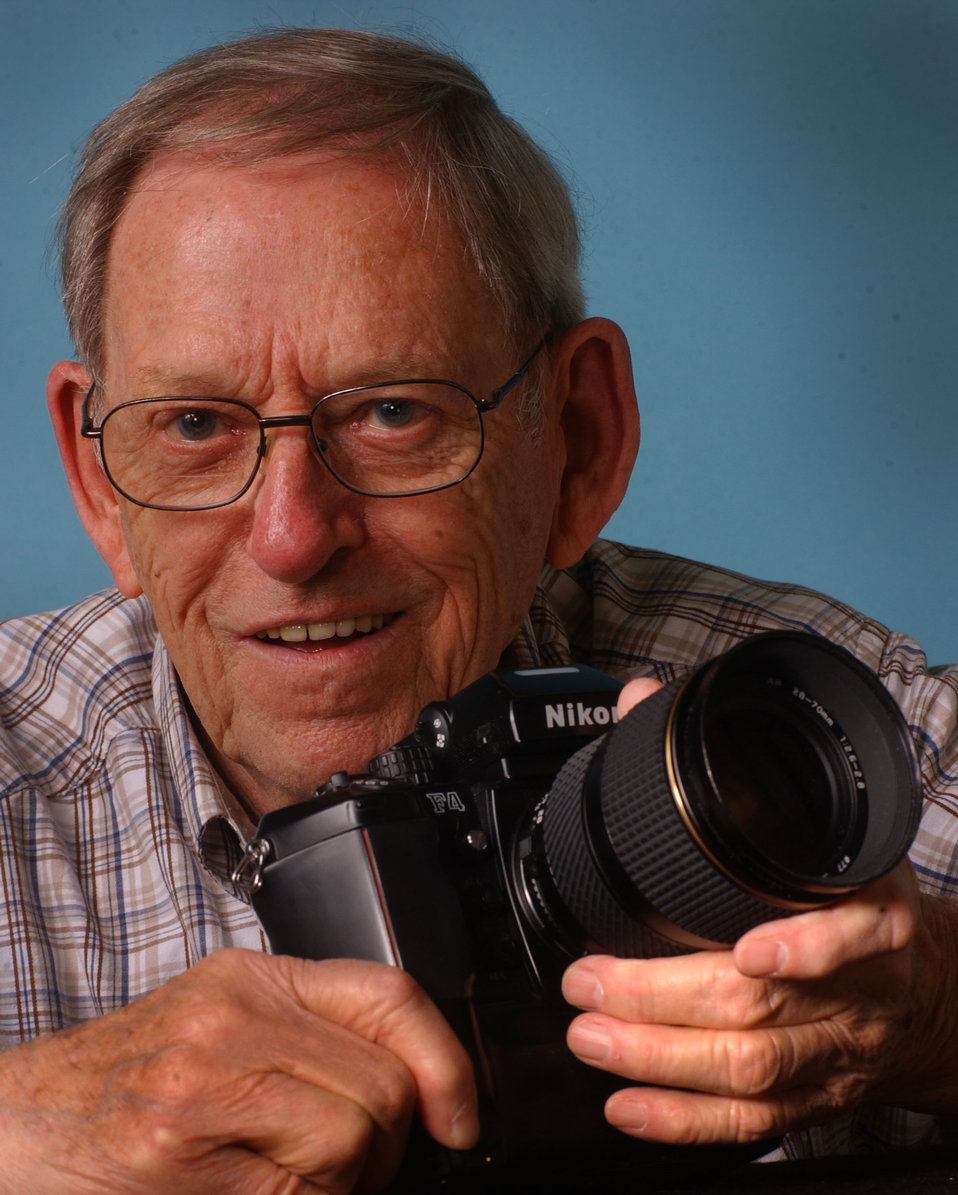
Portrait of Ed Westcott Manhattan Project Photogragher in Oak Ridge

0039 DOE photo by Lynn Freeny
Portrait of Ed Westcott Manhattan Project Photogragher in Oak Ridge Tennessee 2004